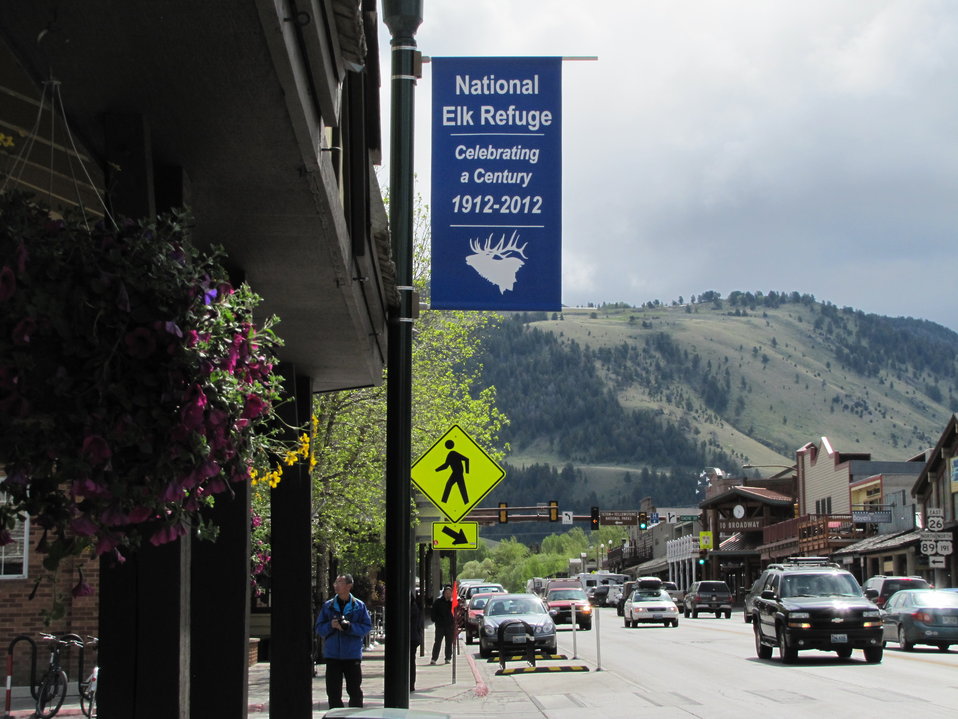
Downtown Jackson, Wyoming Centennial Advertising

National Elk Refuge visitor services staff arranged to have light pole banners made to note the Refuge's centennial. A collection of light pole banners are rotated at approximately twelve key downtown locations throughout the year by the Town of Jackson.

In 2012, the Refuge's centennial banner will serve as the 'default' banner when no other banners are needed to advertise for upcoming special events.